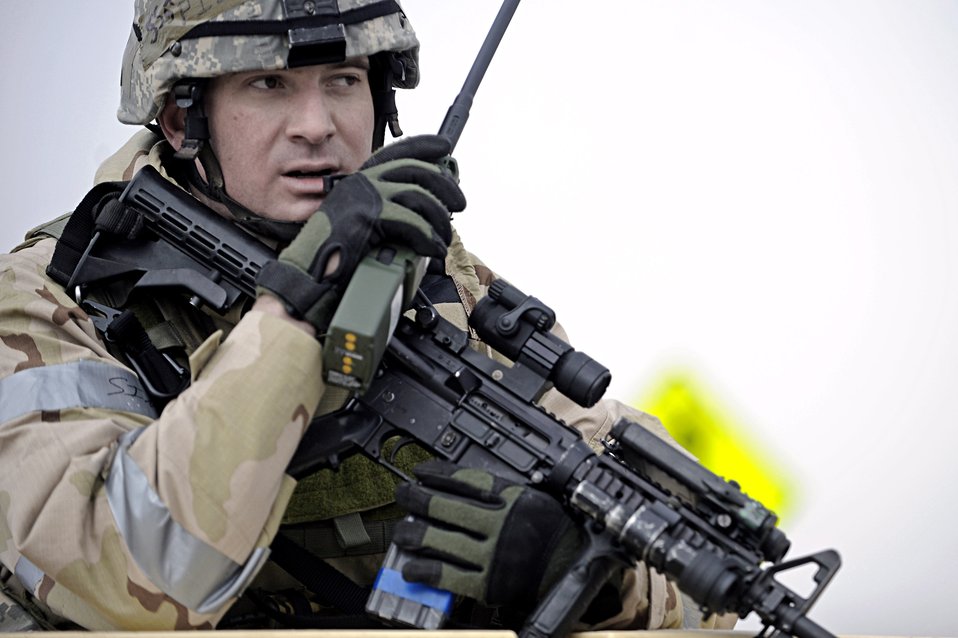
All clear!

Staff Sgt. Ben Pieta, a 28th Security Forces Squadron patrolman, radios to other 28 SFS members after eliminating a